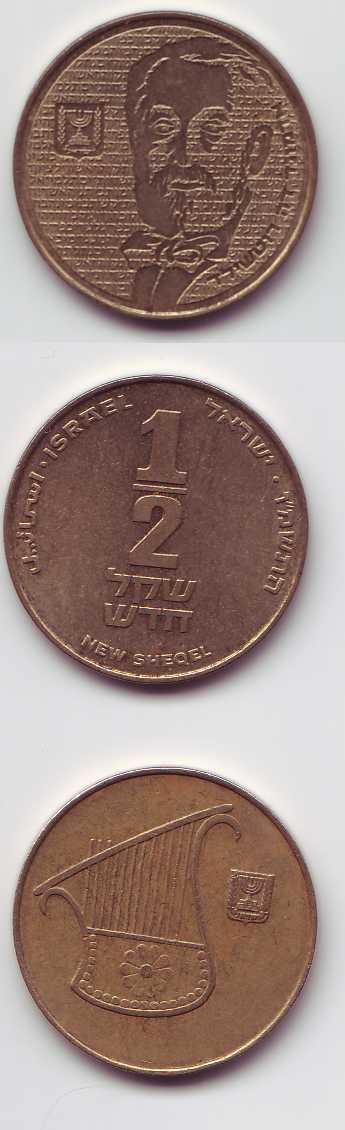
0.5 NIS coin. The top most coin has an imprint of Edmond de Rothsshild. The bottom two are of the same coin - התשמ'ו